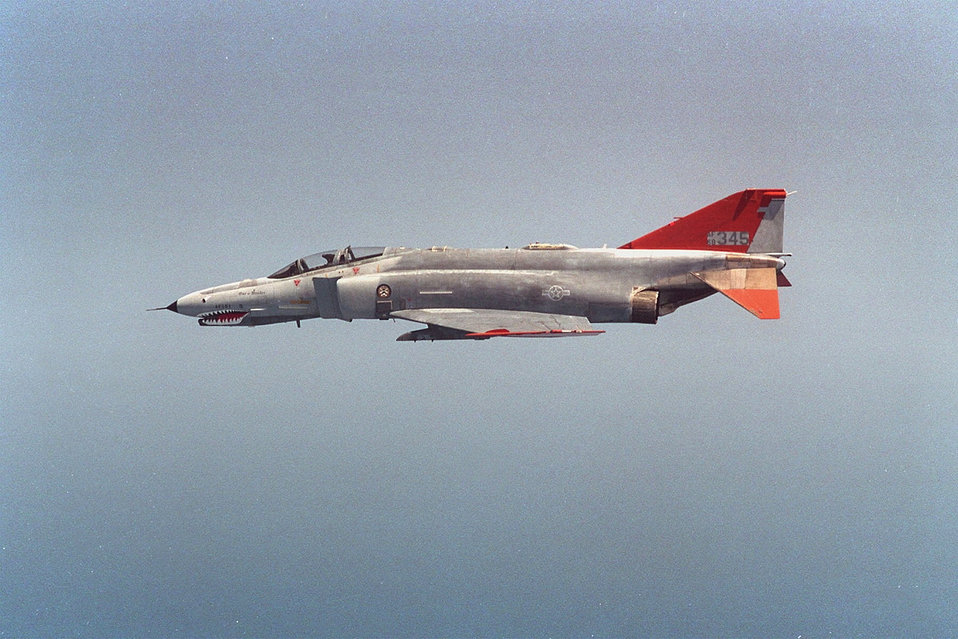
QF-4 drone

FILE PHOTO -- An unmanned QF-4 drone flies over the over Gulf of Mexico on Jul. 17, 1998. Use of these former fighter jets as remote controlled drones gives pilots a realistic target during training missions where live missiles are launched.